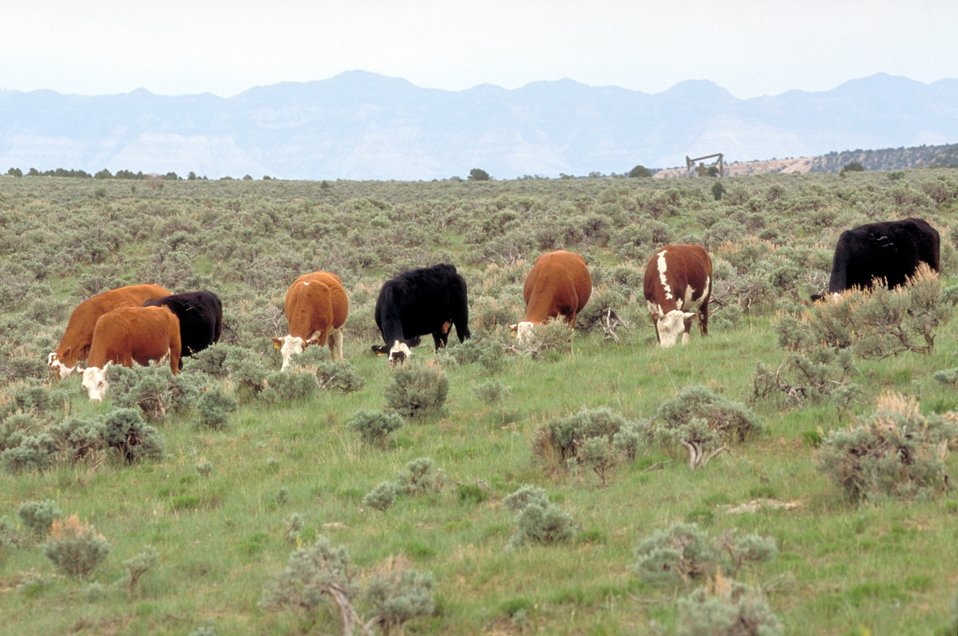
Livestock grazing on BLM lands near Price, Utah.